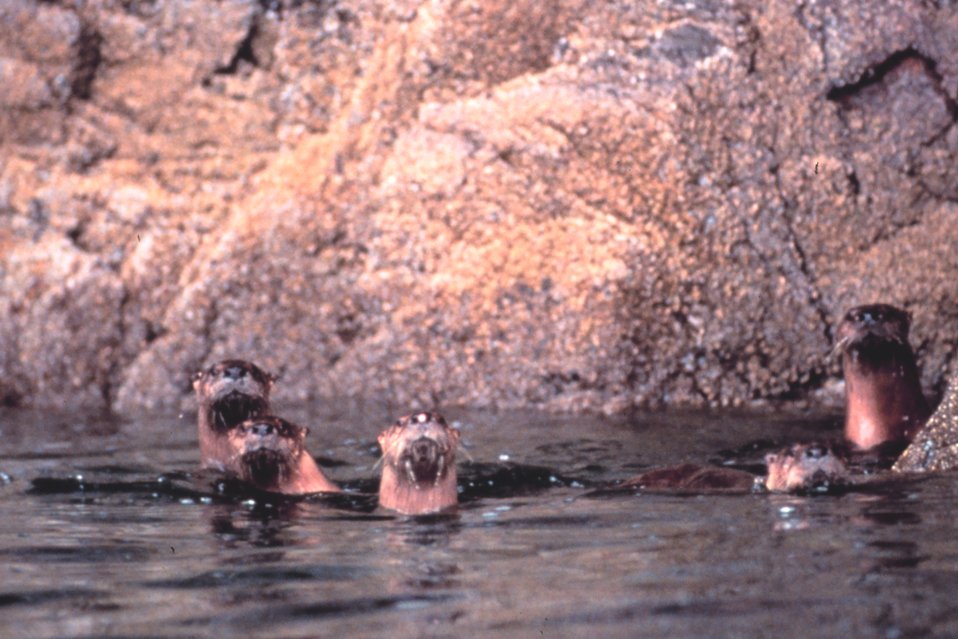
Curious sea otters checking out the photographer